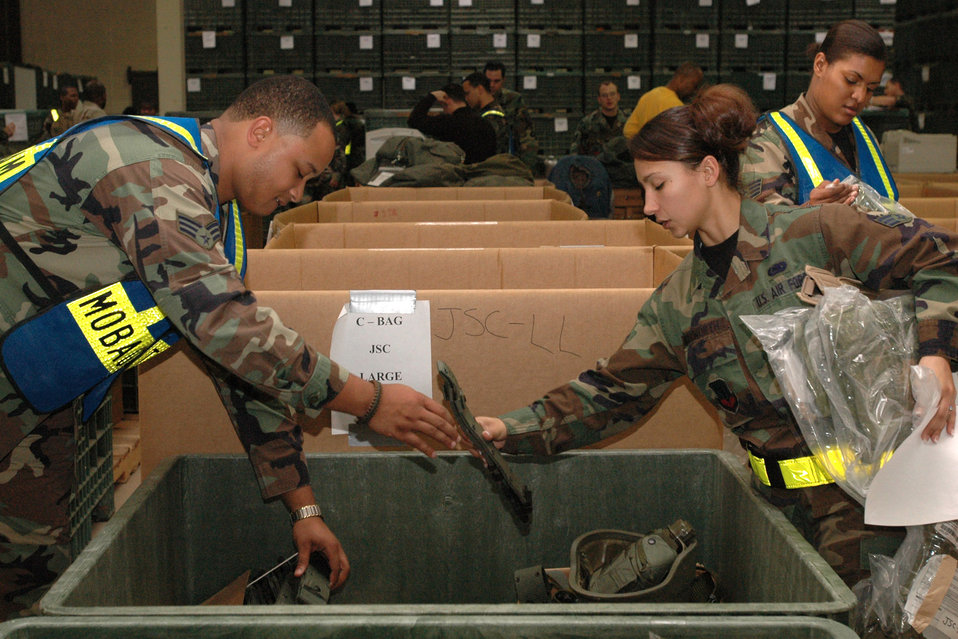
Predeployment briefings

LANGLEY AIR FORCE BASE, Va. (AFPN) -- Airmen team up to assist deploying troops here Jan. 13.